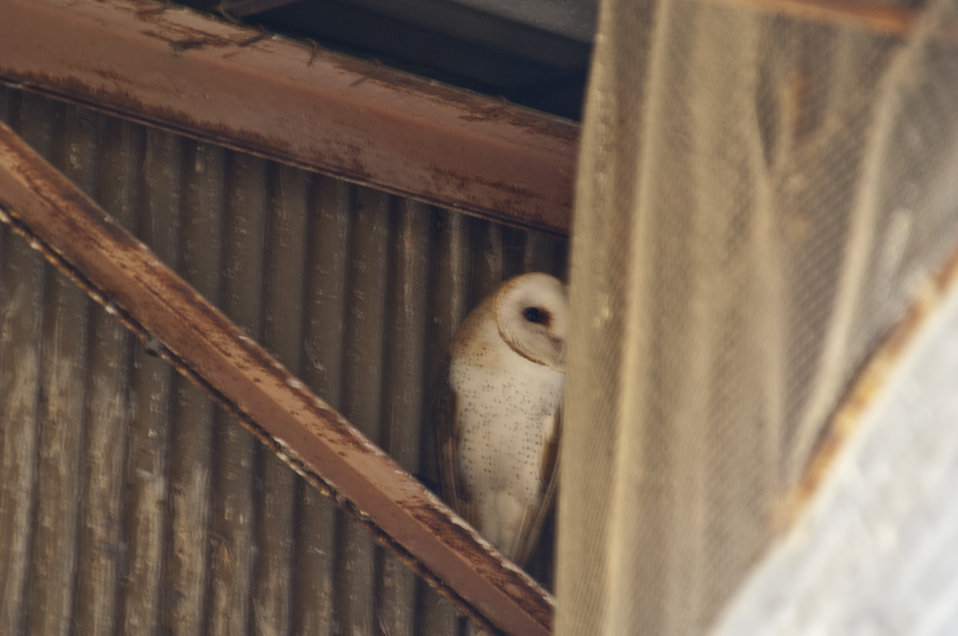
Barn Owl, Carrizo Plain 3